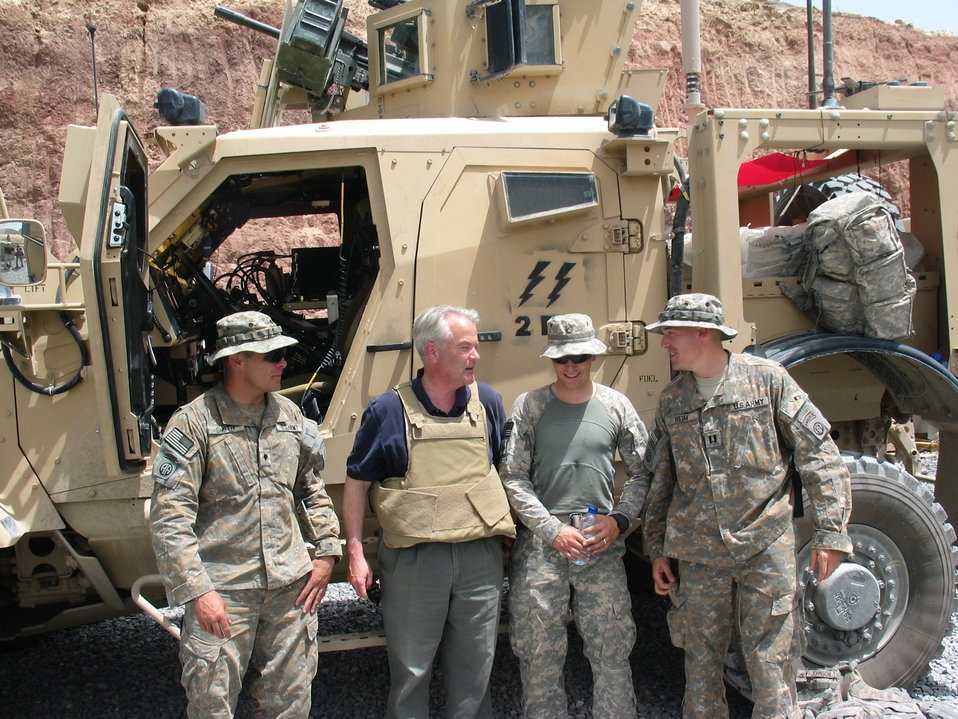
CODEL Berman